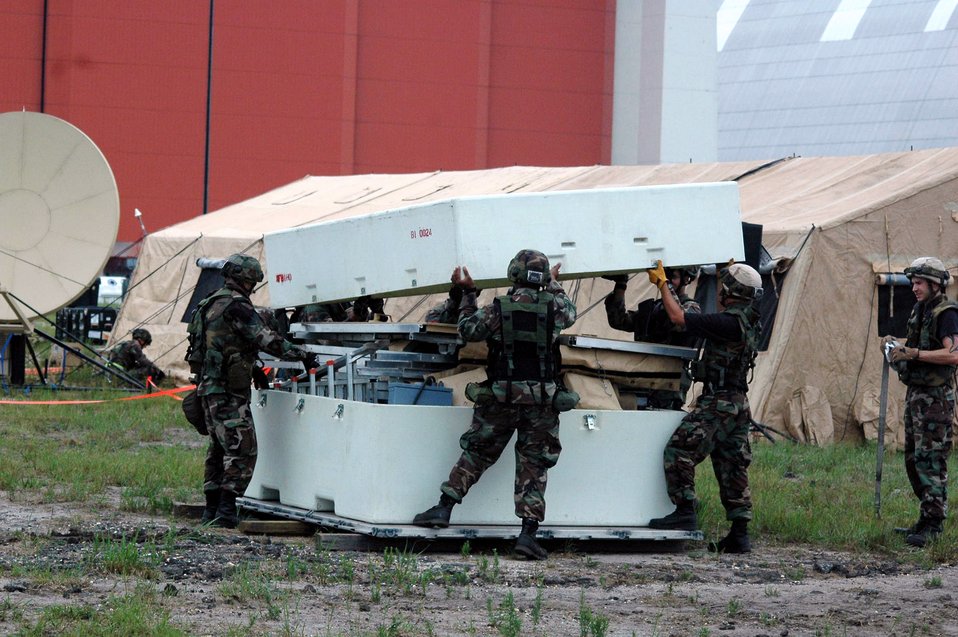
Eagle Flag tests combat support skills

Airmen deployed as part of the fictional 421st Air Expeditionary Group lift the cover off of a cargo box containing a tent during operations for Air Force Exercise Eagle Flag 07-6 Aug. 26 at Naval Air Engineering Station Lakehurst, N.J. The exercise is coordinated by the Air Force Expeditionary Center's 421st Combat Training Squadron at Fort Dix, N.J.